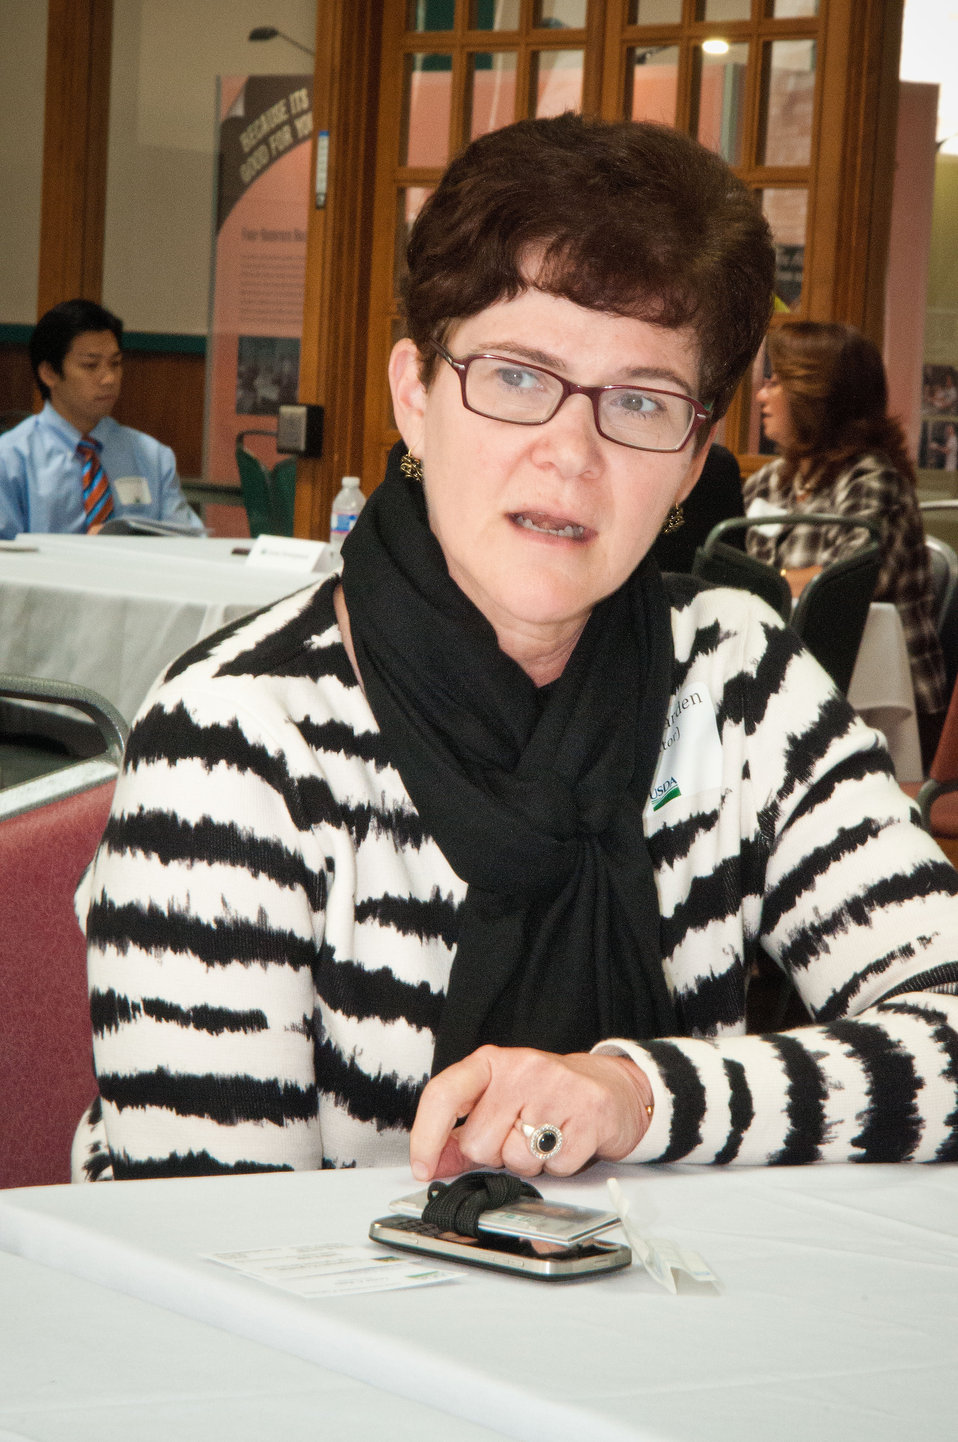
U.S. Department of Agriculture (USDA) Secretary’s Chief of Staff Krysta Harden offers advice at USDA’s Office of Human Resources Management (OHRM) Virtual University’s Fall Flash Mentoring Event at USDA in Washington, D.C. on Thursday, Sept. 6, 2012 in Washington, DC.